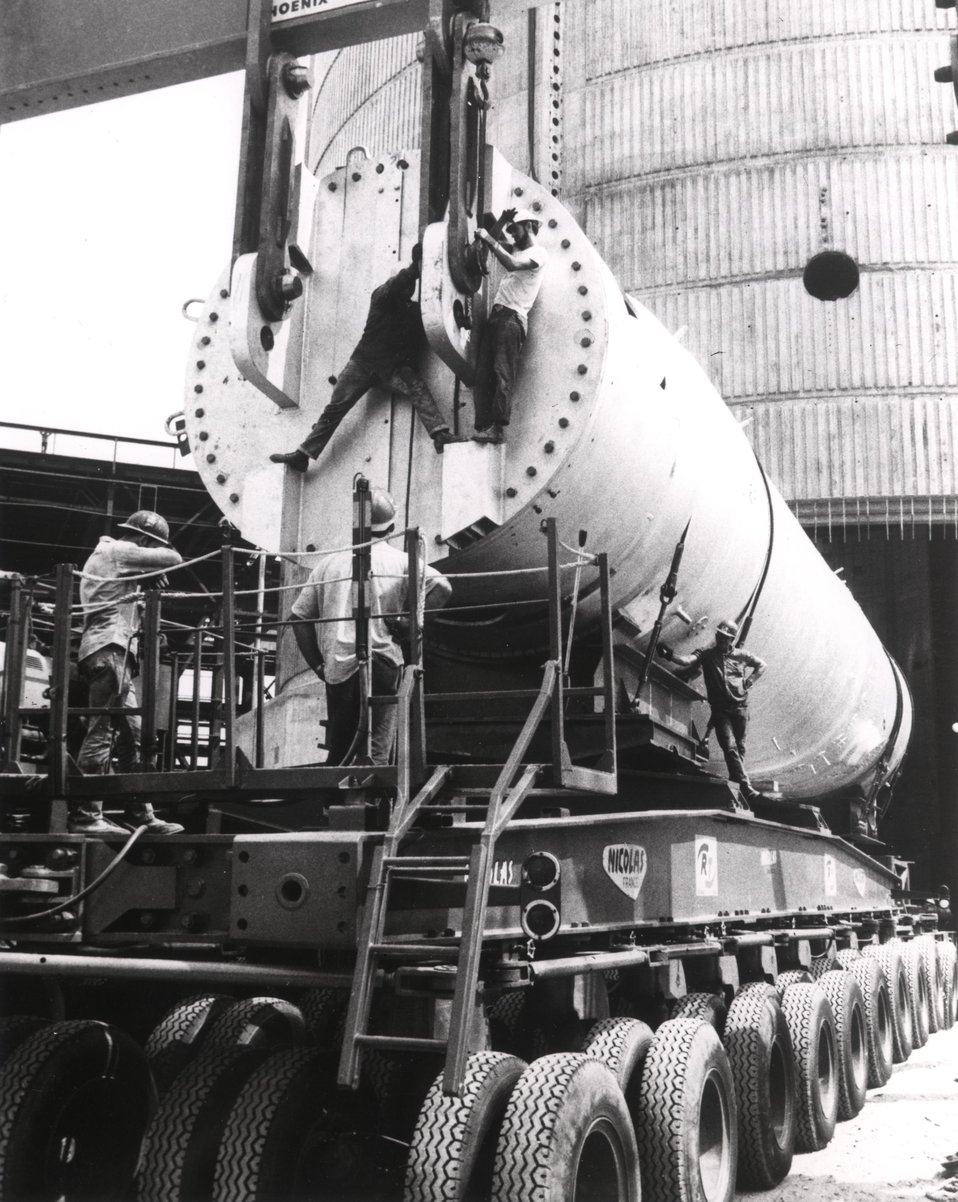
The 570-ton steam generator is prepared for placement in the containment building at Duke Power's Oconee nuclear power station near Seneca, S.C. Circa 1972.